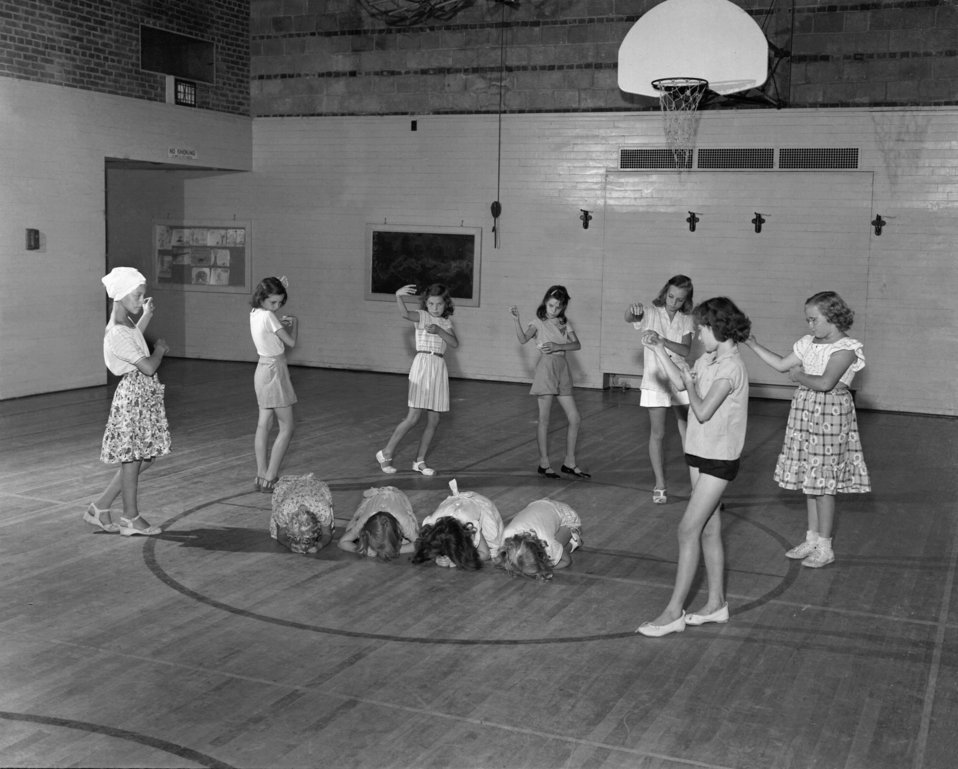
Recreation Dancing Class Oak Ridge Tennessee

5140-2 DOE photo by Lillian Stokes

Recreation Dancing Class at Cedar Hill School Oak Ridge Tennessee 8/5/1948